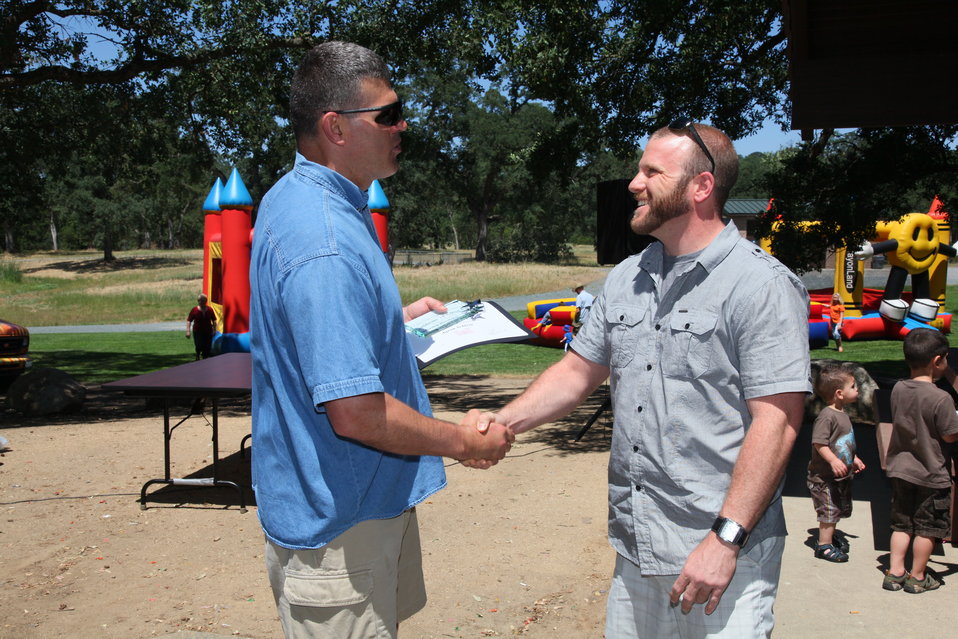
2011 Annual Picnic